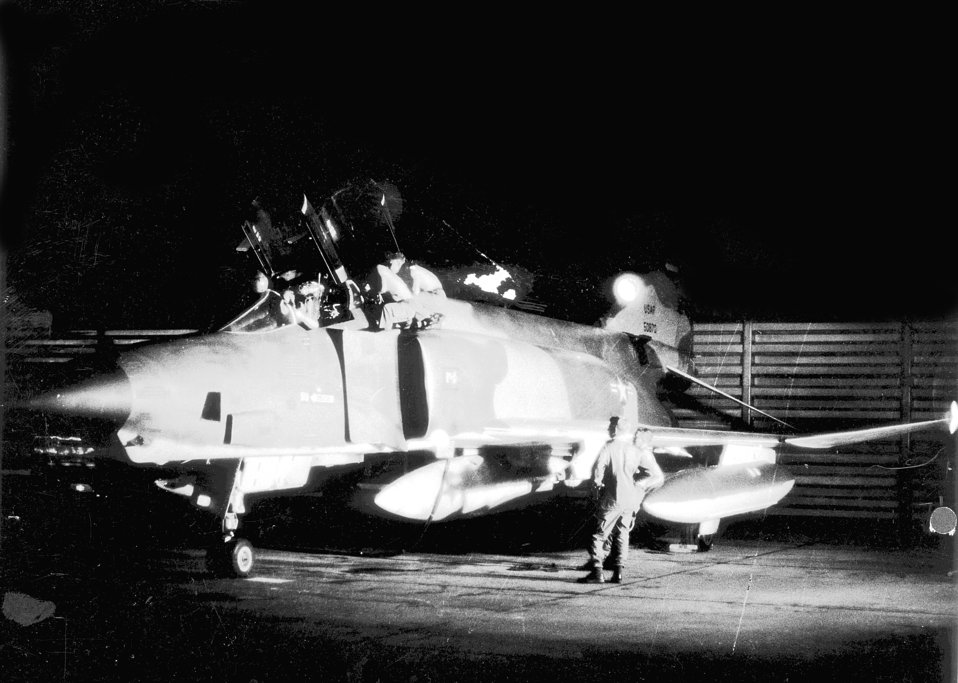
RF-4 Phantom

1950's -- Air Force RF-4 Phantom aircraft are maintained around the clock. Above Airman First Class Elmer J. Schulte, 22, of Norway, Iowa, and Airman Second Class Jackson E. Ozment, 20, of Tribune, Kansas, prepare their